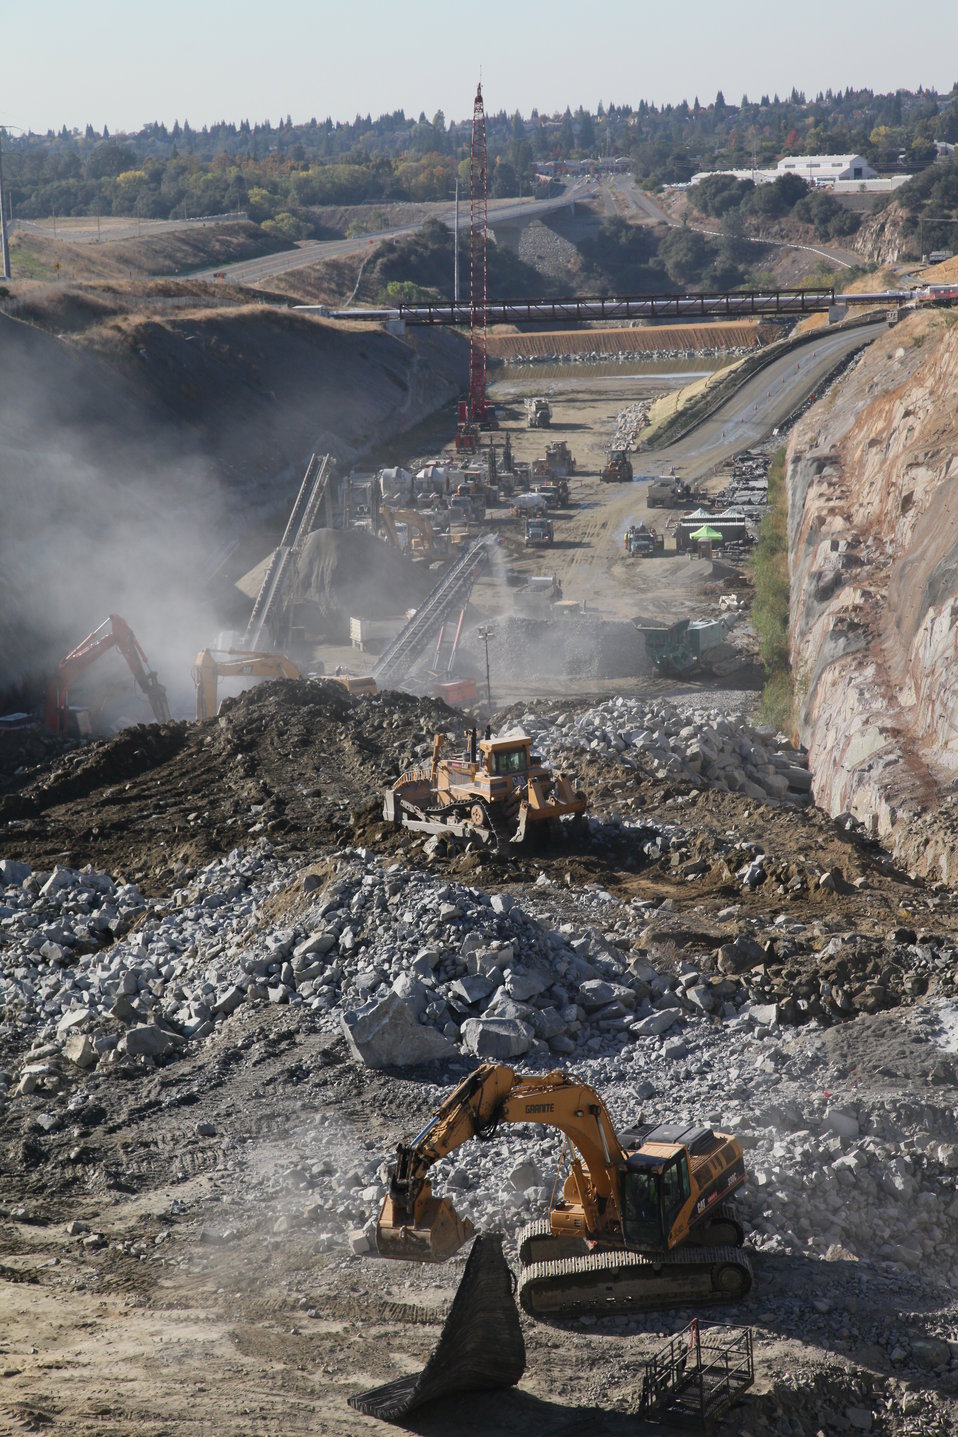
Continued progress at the Folsom auxiliary spillway

Excavation of the auxiliary spillway at Folsom Dam in Folsom, Calif., continues Nov. 10, 2011. The spillway will let Folsom Dam release water sooner and more safely. The project is part of the Folsom Dam Joint Federal Project, a joint effort of the U.S. Army Corps of Engineers Sacramento District, the U.S. Bureau of Reclamation, the Central Valley Flood Protection Board and the Sacramento Area Flood Control Agency to improve the safety of the dam and reduce flood risk for the greater Sacramento area.